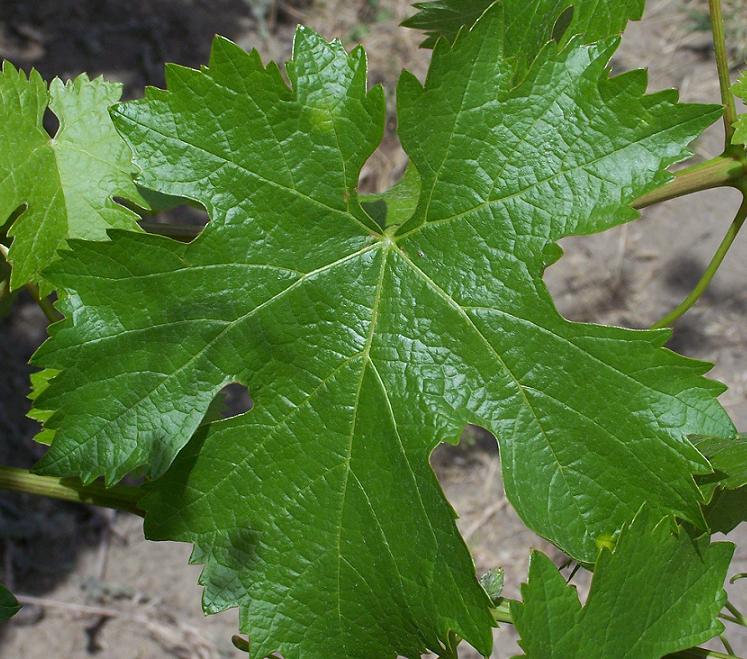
Cab franc leaf from Hedges vineyard in the en:Red Mountain AVA. Photo take on Sun June 10th 200 with a kodak z650